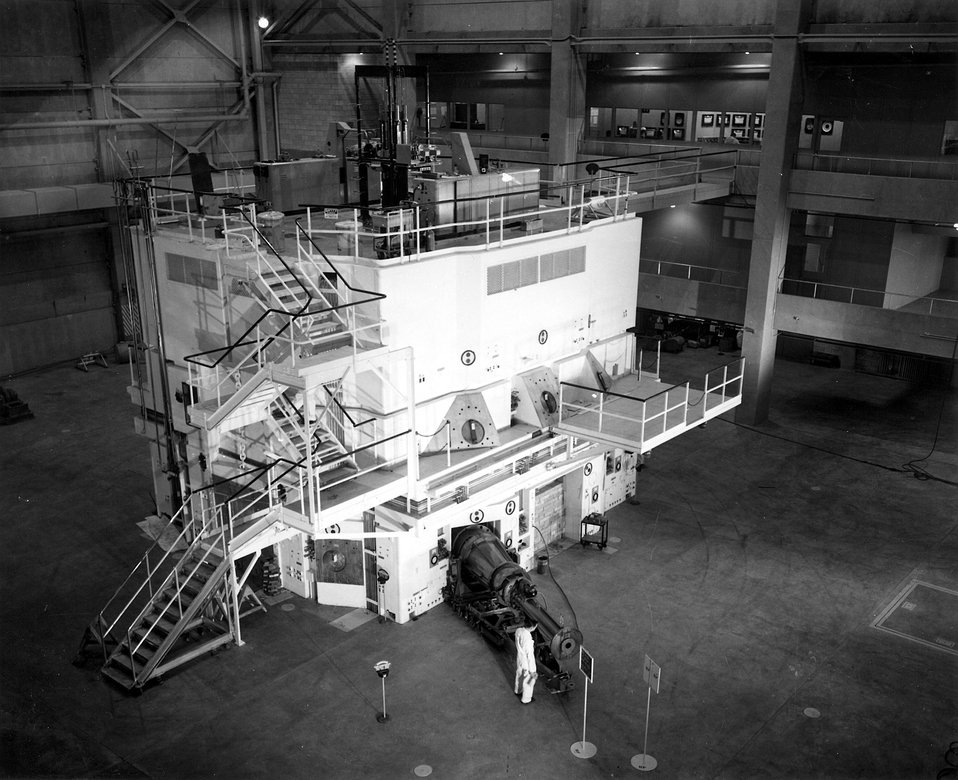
This is a general view of the Materials Testing Reactor at the National Reactor Testing Station in Idaho. Circa 1954.